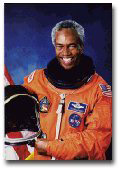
Col. Guion Bluford: First African-American astronaut